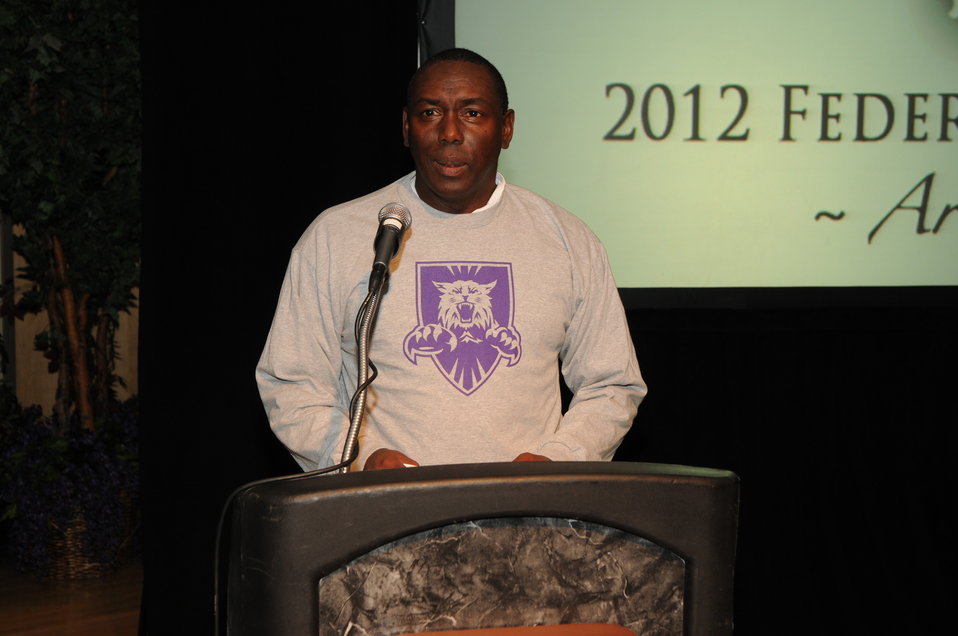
Final Remarks

The U.S. Fish & Wildlife Service sponsored the 2012 Federal Duck Stamp Art Contest September 28 and 29 in Ogden, Utah, at Weber State University. A panel of five judges was responsible for choosing the art work used to design the 2013-2014 Migratory Bird Hunting and Conservation Stamp.